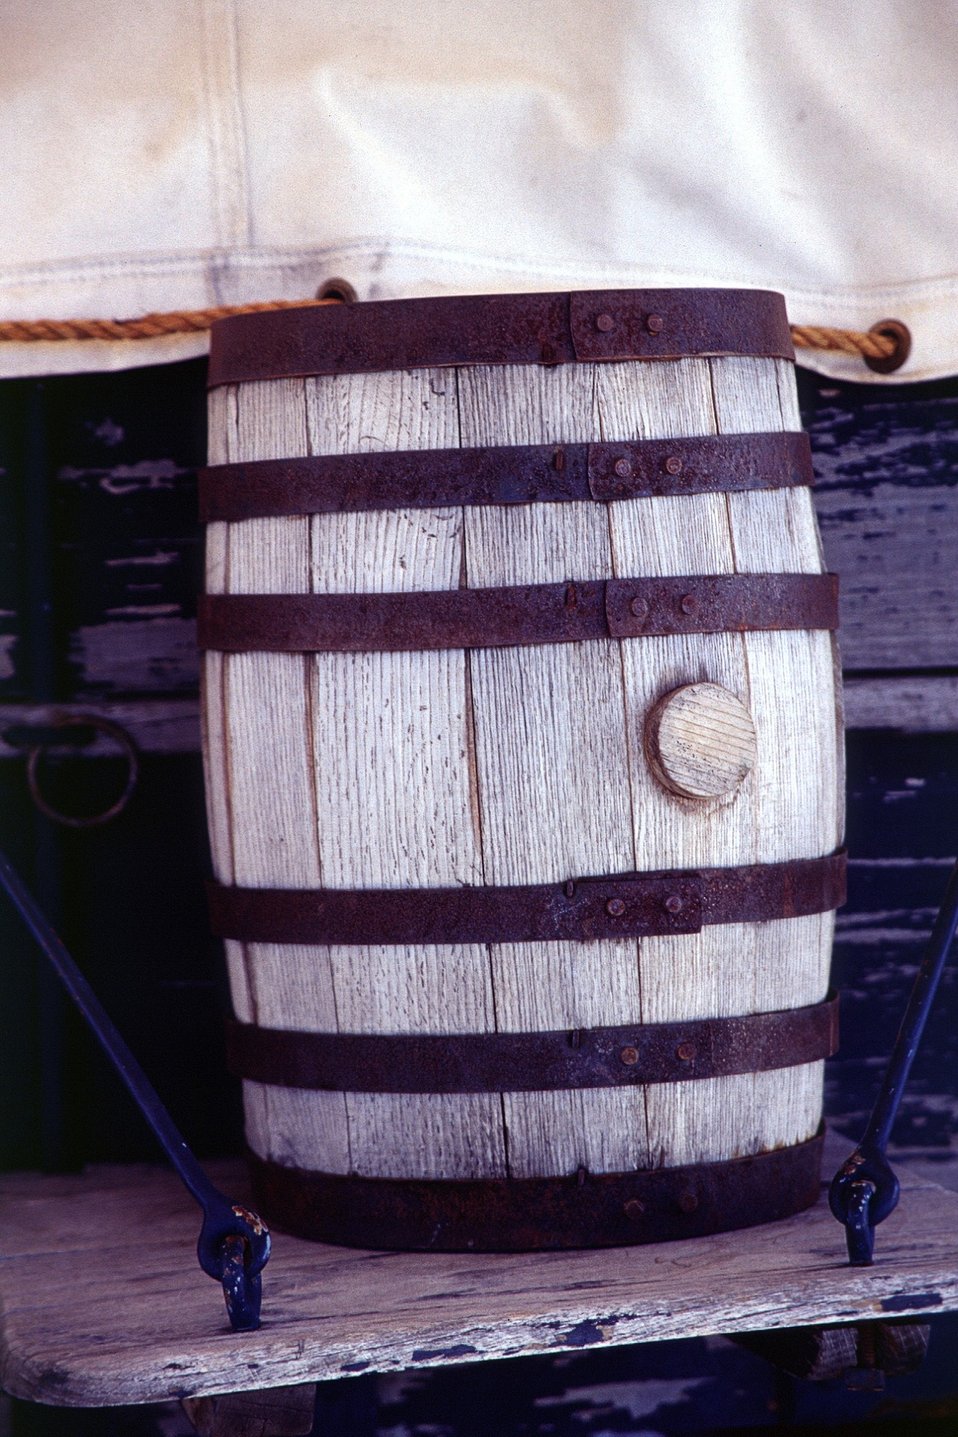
Medium shot of water barrel on covered wagon. NHOTIC 10th Anniversary.